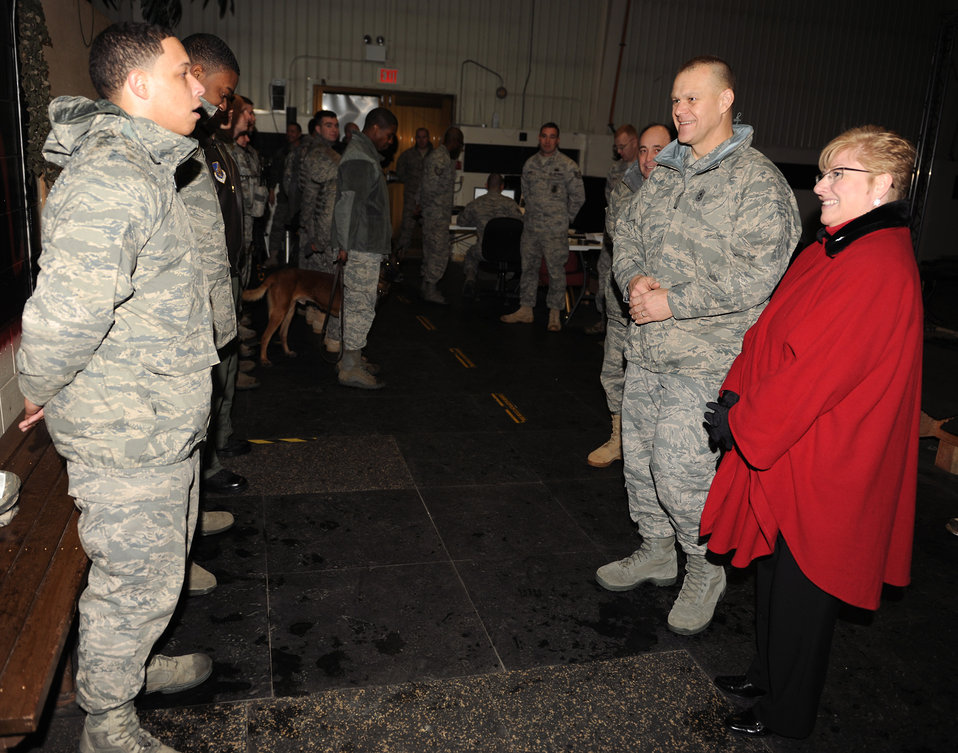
Chief Roy visits Kunsan

Airman First Class Zachary Tealer gives a mission briefing to Chief Master Sgt. of the Air Force James A. Roy and his wife, Paula, Dec. 30, 2010, during their visit to Kunsan Air Base, South Korea. Chief and Mrs. Roy visited Kunsan AB Dec. 29 and 30, during their year-end tour of Pacific Air Forces bases. Airman Tealer is an 8th Security Forces Squadron responder.